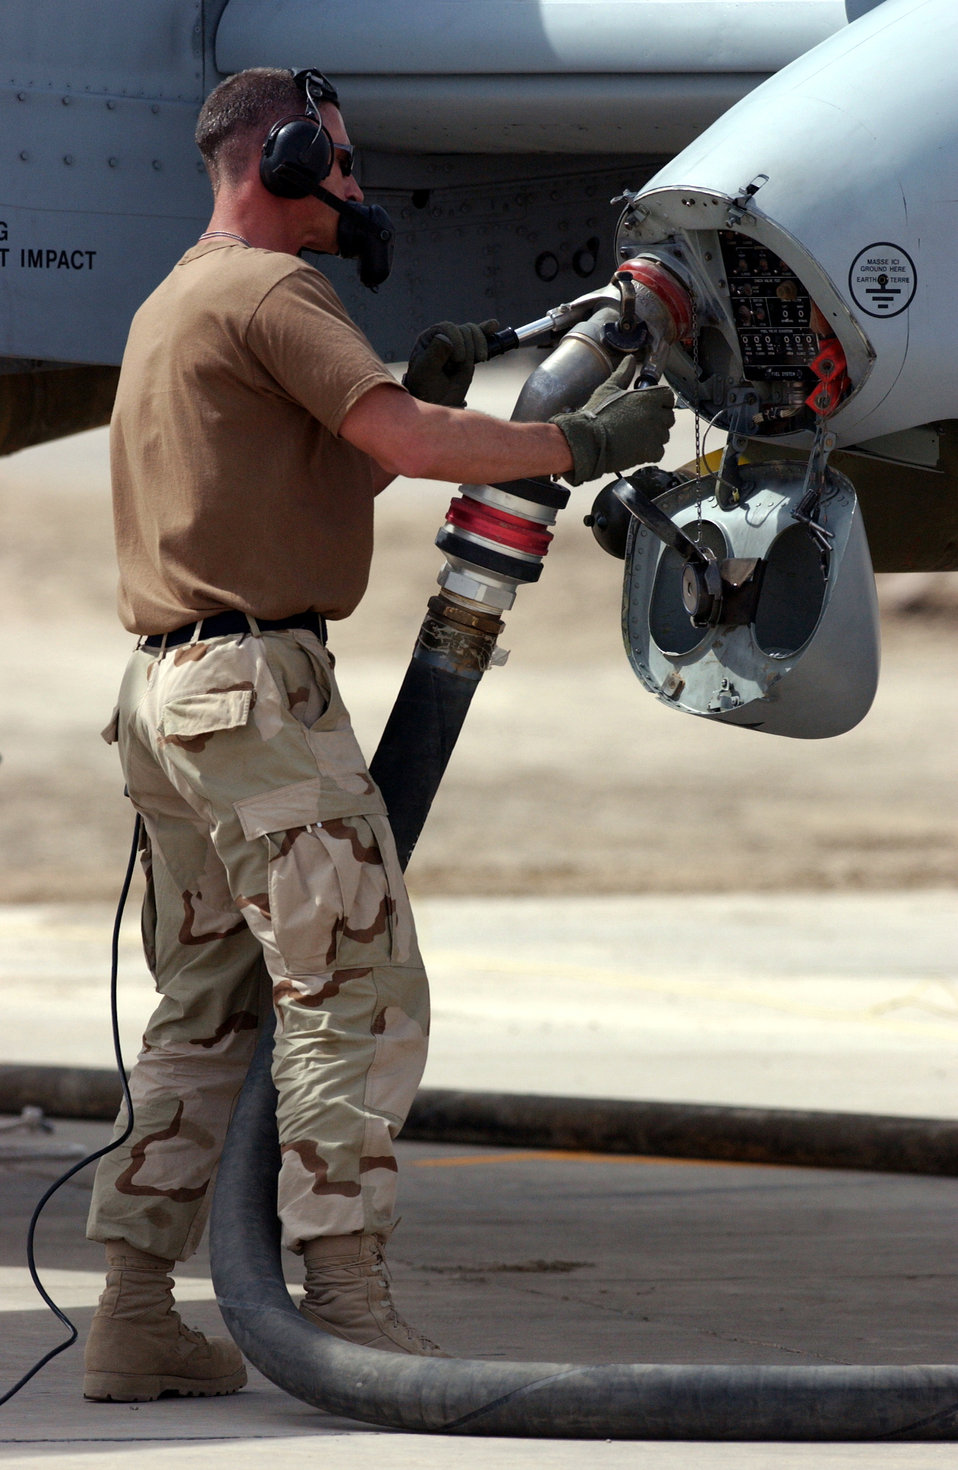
Thunderbolt fuel

OPERATION IRAQI FREEDOM -- Master Sgt. Kevin Bossaller keeps in voice contact with the pilot as he refuels an A-10 Thunderbolt II. This was the first A-10